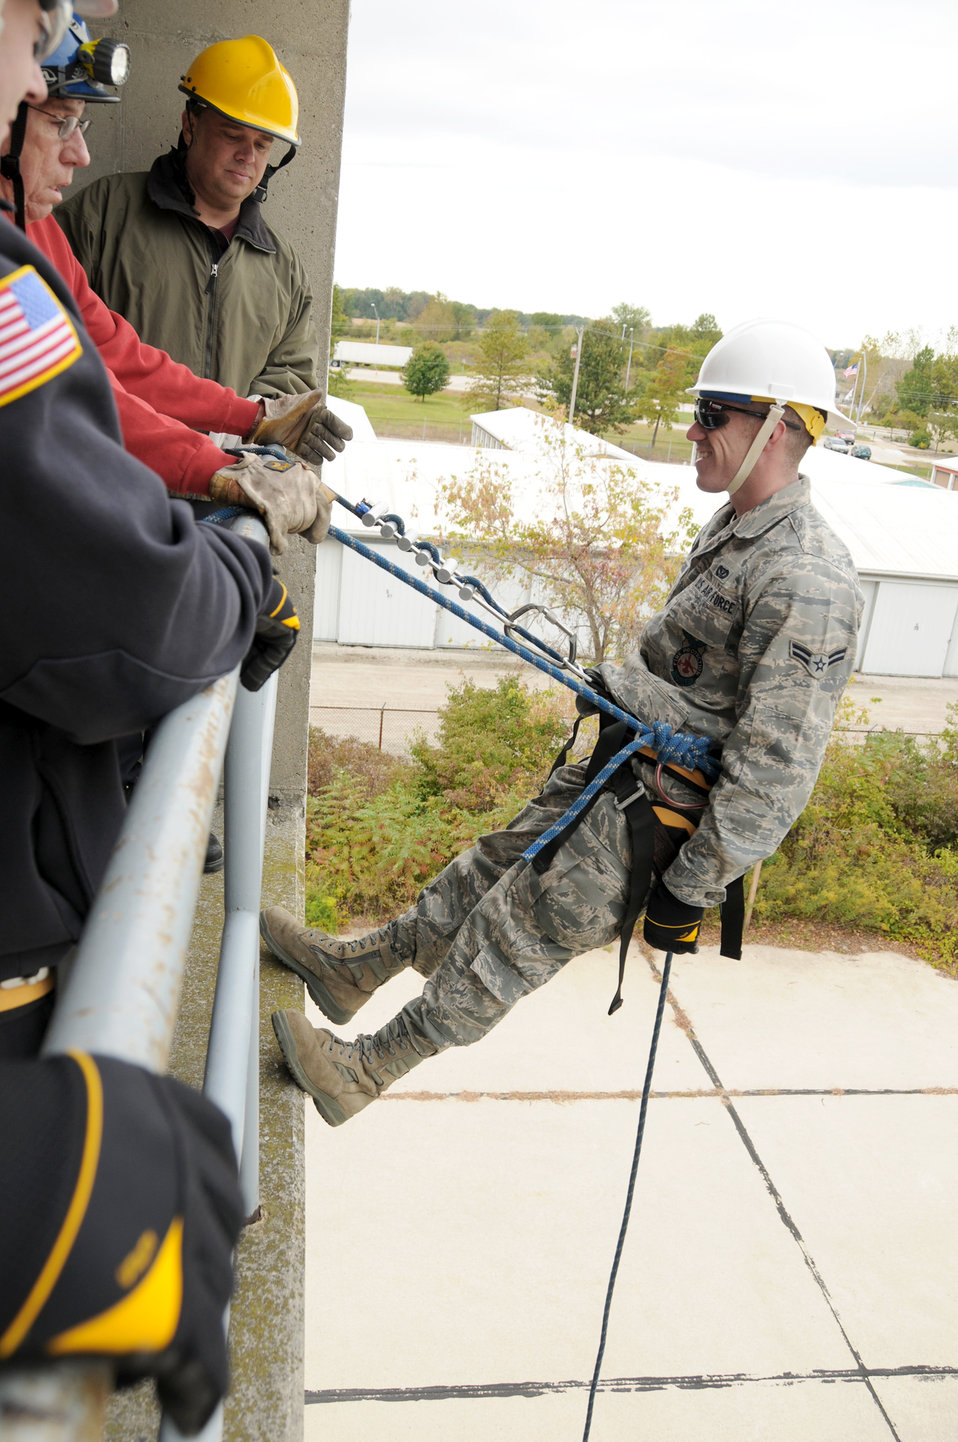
Firefighters on a training mission

Airman 1st Class Devin VanGorder prepares to rappel down the side of a training facility Oct. 5, 2010, at the Toledo Fire and Rescue Department Training Academy in Ohio. Airman VanGorder is assigned to the Ohio Air National Guard's 180th Fighter Wing.